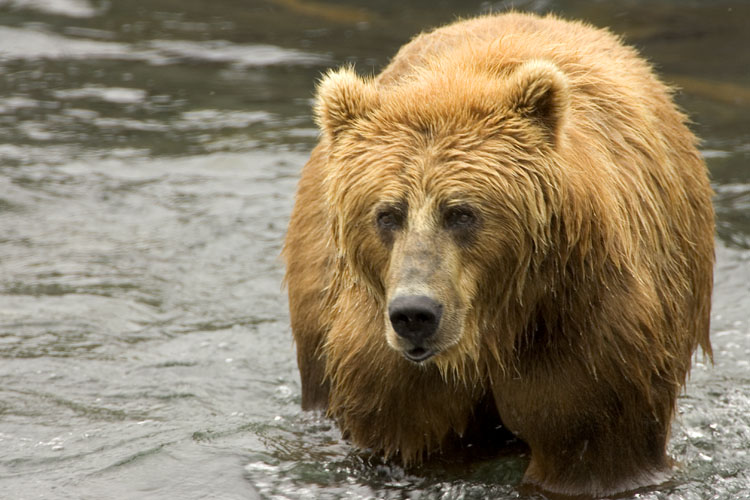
KOD Hildebrand (35)

Kodiak National Wildlife Refuge- Wildlife